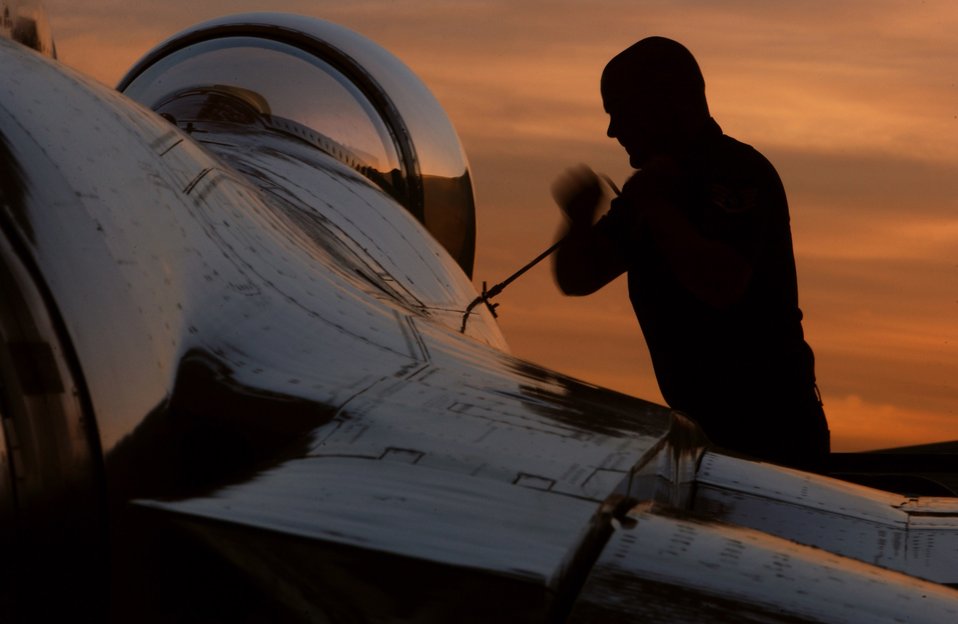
Tighten down

Staff Sgt. Troy Romans tightens down an F-16 Fighting Falcon canopy after a periodic inspection at Nellis Air Force Base, Nev. The U.S. Air Force Thunderbirds perform more than 65 shows annually across the United States and abroad. Sergeant Romans is an egress specialist with the Thunderbirds.